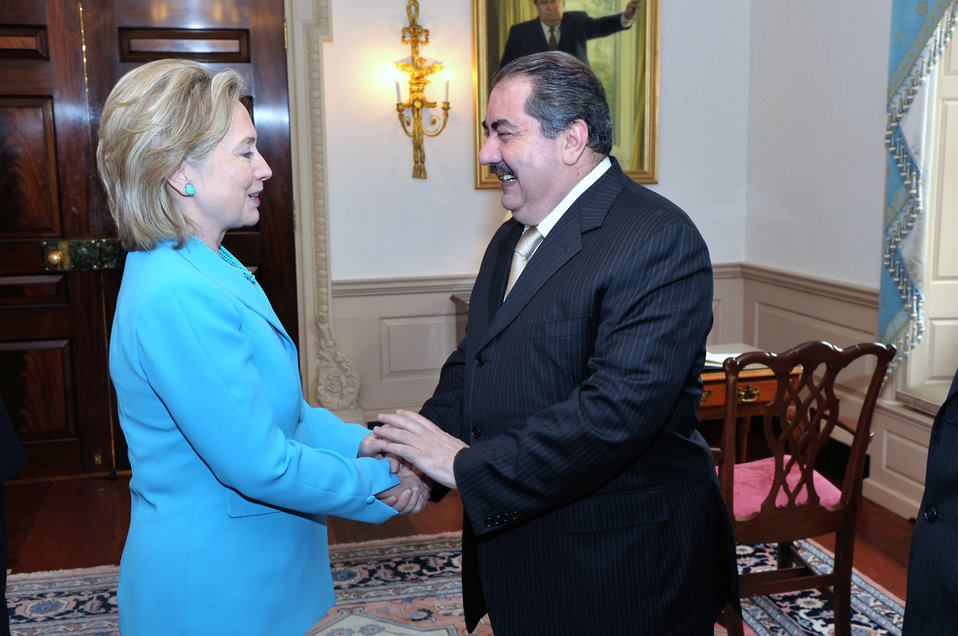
Secretary Clinton Shakes Hands With Iraqi Foreign Minister Hoshyar Zebari

U.S. Secretary of State Hillary Rodham Clinton shakes hands with Iraqi Foreign Minister Hoshyar Zebari after a bilateral meeting at the U.S. Department of State in Washington, D.C., on July 13, 2010.